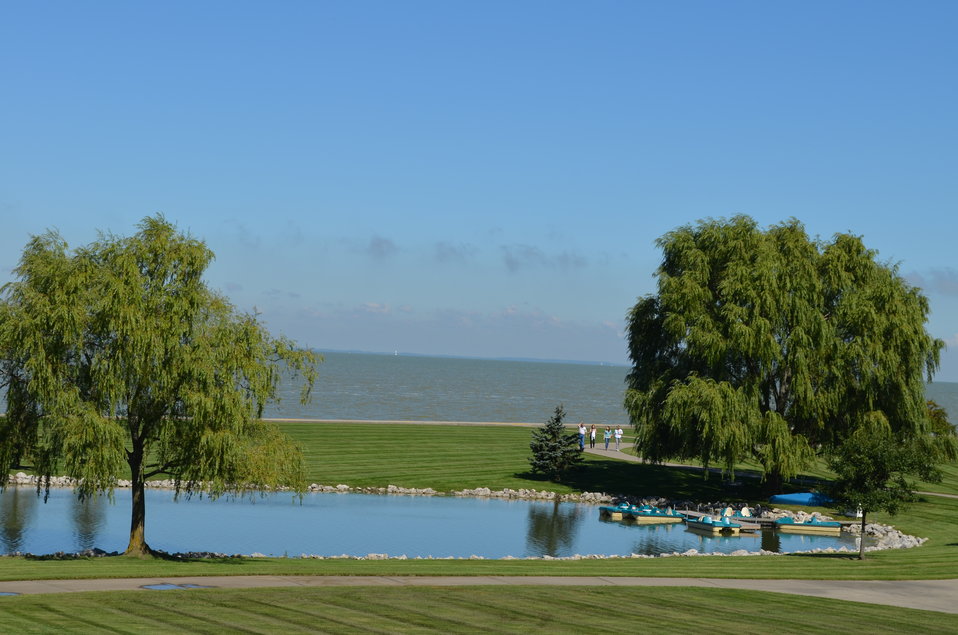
Maumee Bay State Park in Oregon, Ohio was the site of the 2013 Federal Duck Stamp Contest.